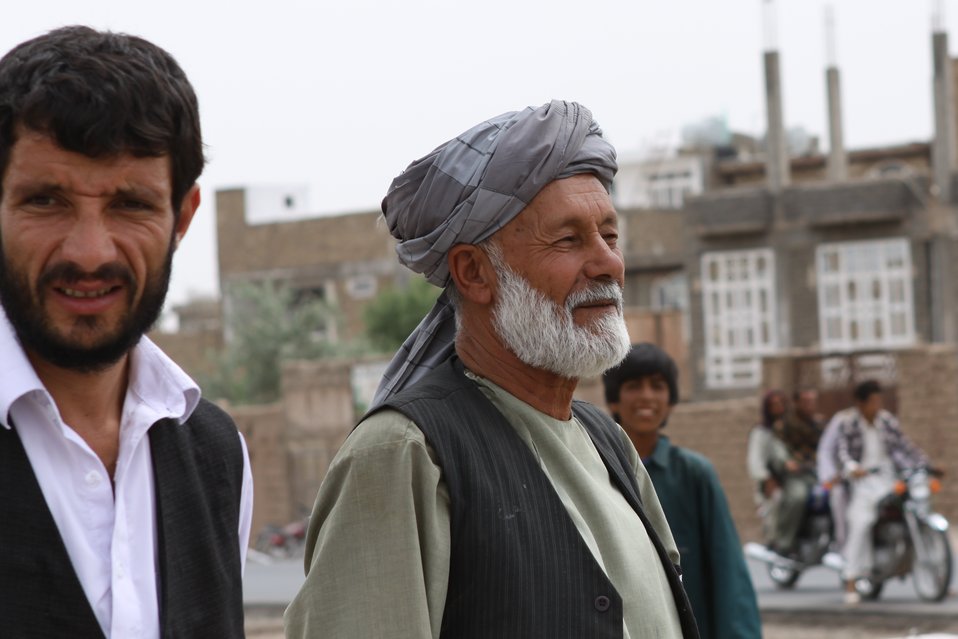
100525 Hirat Marble Conference 598